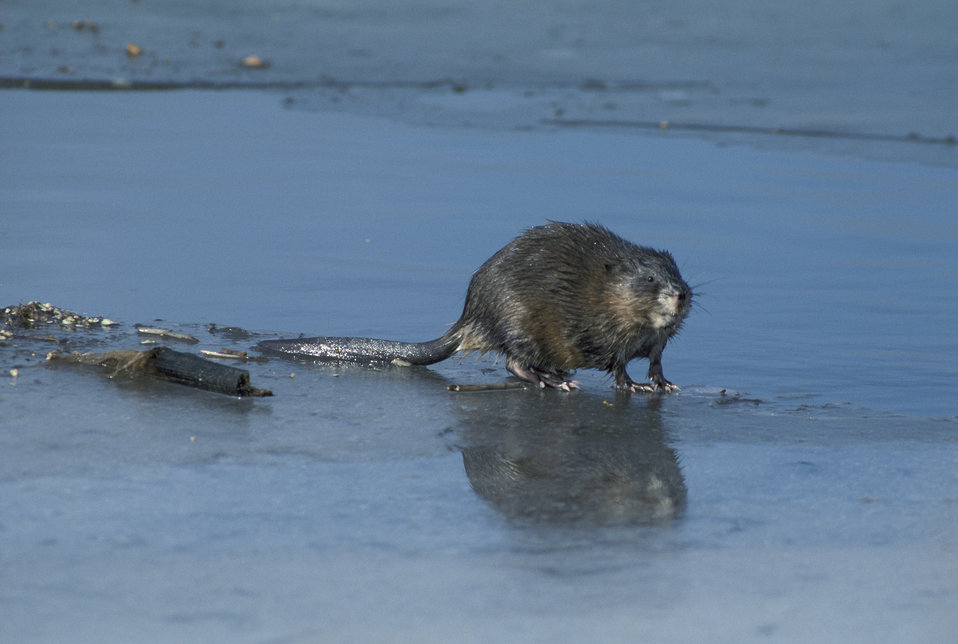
Muskrat

The muskrat (Ondatra zibethicus) occurs throughout most of Alaska.The highest populations are in the broad floodplains and deltas of major rivers and in
marshy areas. Muskrats are one of Alaska's most visible and numerous furbearers. Sometimes mistaken at first glance for the beaver, the muskrat's small size and ratlike tail are the most immediate identification marks.

USFWS Yukon Delta NWR